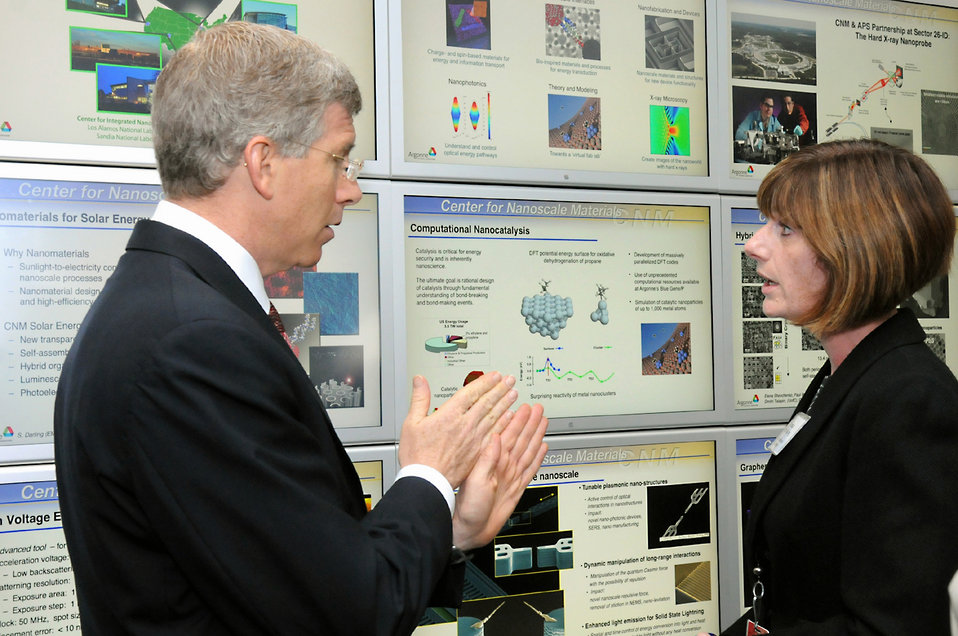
A visit to Center for Nanoscale Materials

Deputy Secretary of Energy Daniel Poneman speaks with Amanda Petford-Long, Director of the Center for Nanoscale Materials at Argonne National Laboratory